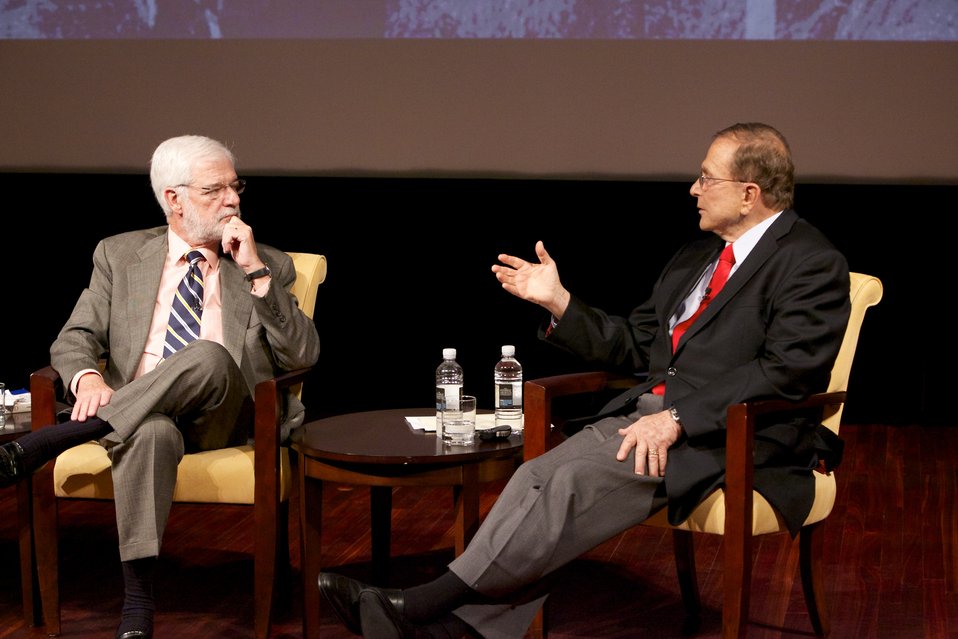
A Nation of Immigrants: How They Shaped America